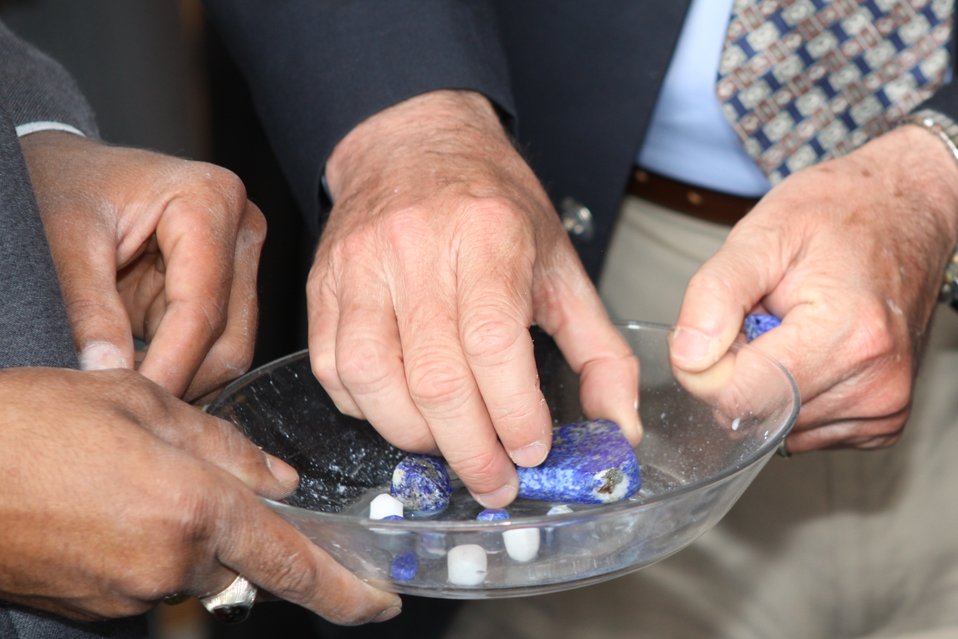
100525 Hirat Marble Conference 529